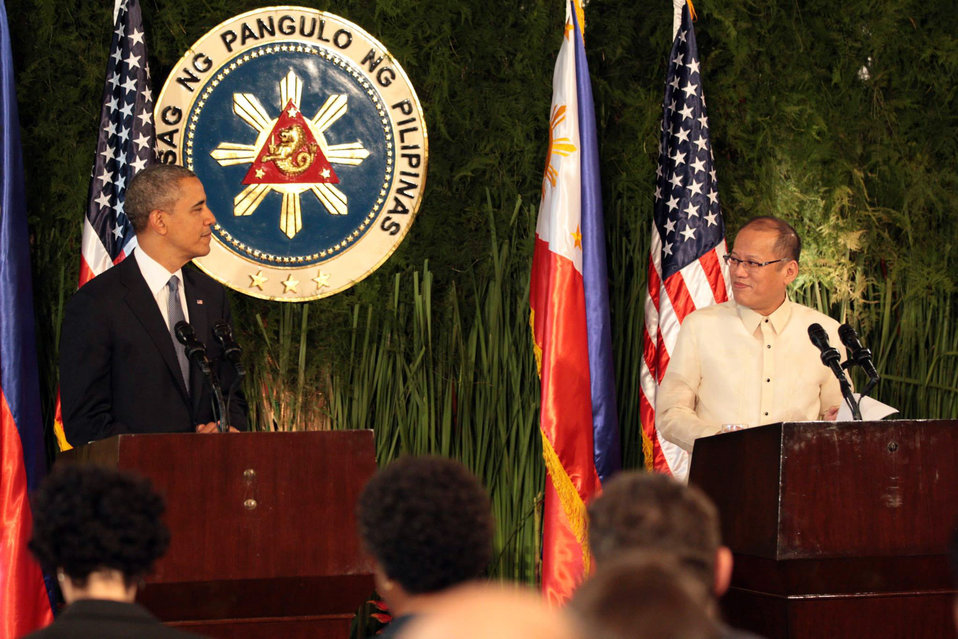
Presidents Obama and Aquino III Hold a Joint Press Conference in Manila

U.S. President Barack Obama and Philippine President Benigno Aquino III hold a joint press conference at the at Malacanang Palace in Manila, Philippines, on April 28, 2014.